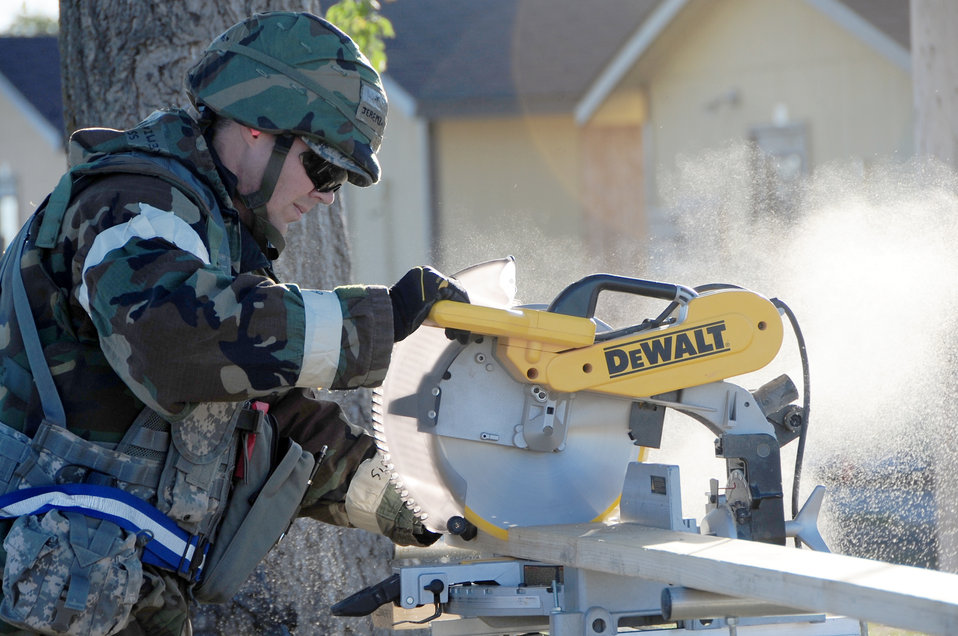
Need power tools

Staff Sgt. Jeremiah Messimer uses a power saw to cut out pieces for a drop-arm gate during a Phase II Operational Readiness Inspection at Ellsworth Air Force Base, S.D. Oct. 14, 2010. Sergeant Messimer is a structural craftsman with the 28th Civil Engineer.